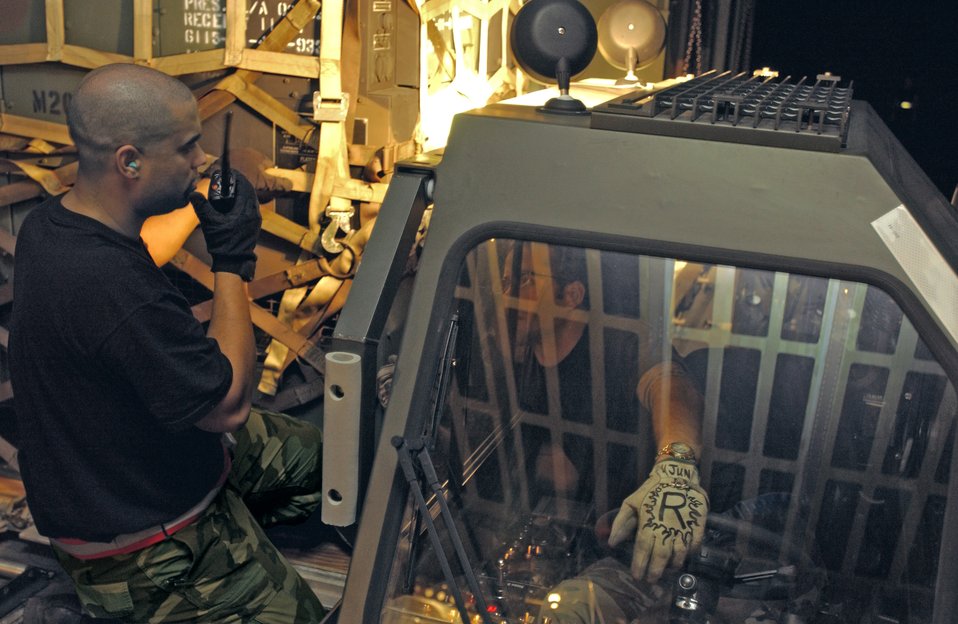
Ready to load another

UTAPAO, Thailand -- Staff Sgt. Rod Hale (left) radios for another loader as Staff Sgt. Matt Heifner waits at the staging area to load supplies during the tsunami disaster relief effort Jan. 3. Both Airmen are deployed from the 615th Air Mobility Operations Group at Travis Air Force Base, Calif.